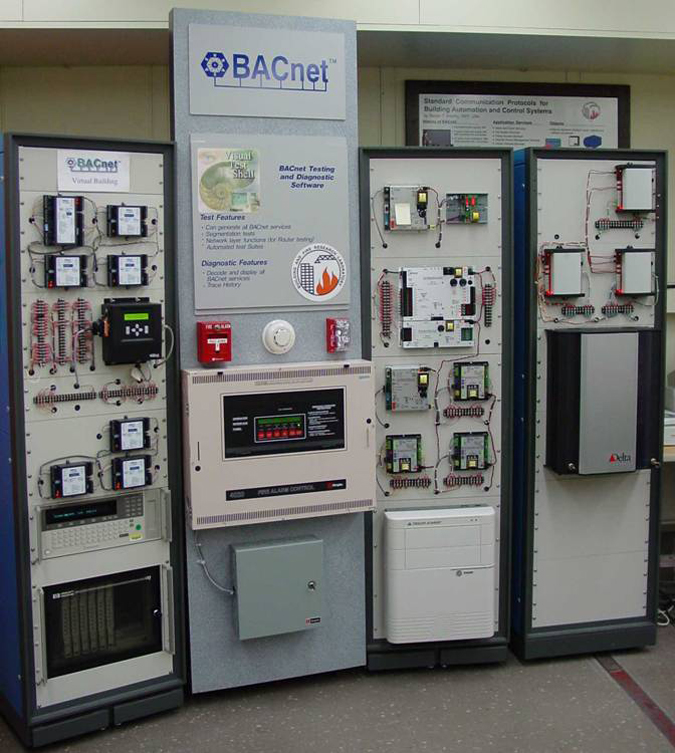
Virtual Cybernetic Building Test Bed

This Virtual Cybernetic Building Test Bed in NIST's Building and Fire Research Laboratory is used to test the automated fault detection and diagnostics (FDD) technology recently incorporated into California's Title 24 Building Standards Code. This HVAC control equipment is typical of that found in commercial buildings. NIST researchers used it to emulate interior and exterior environments.